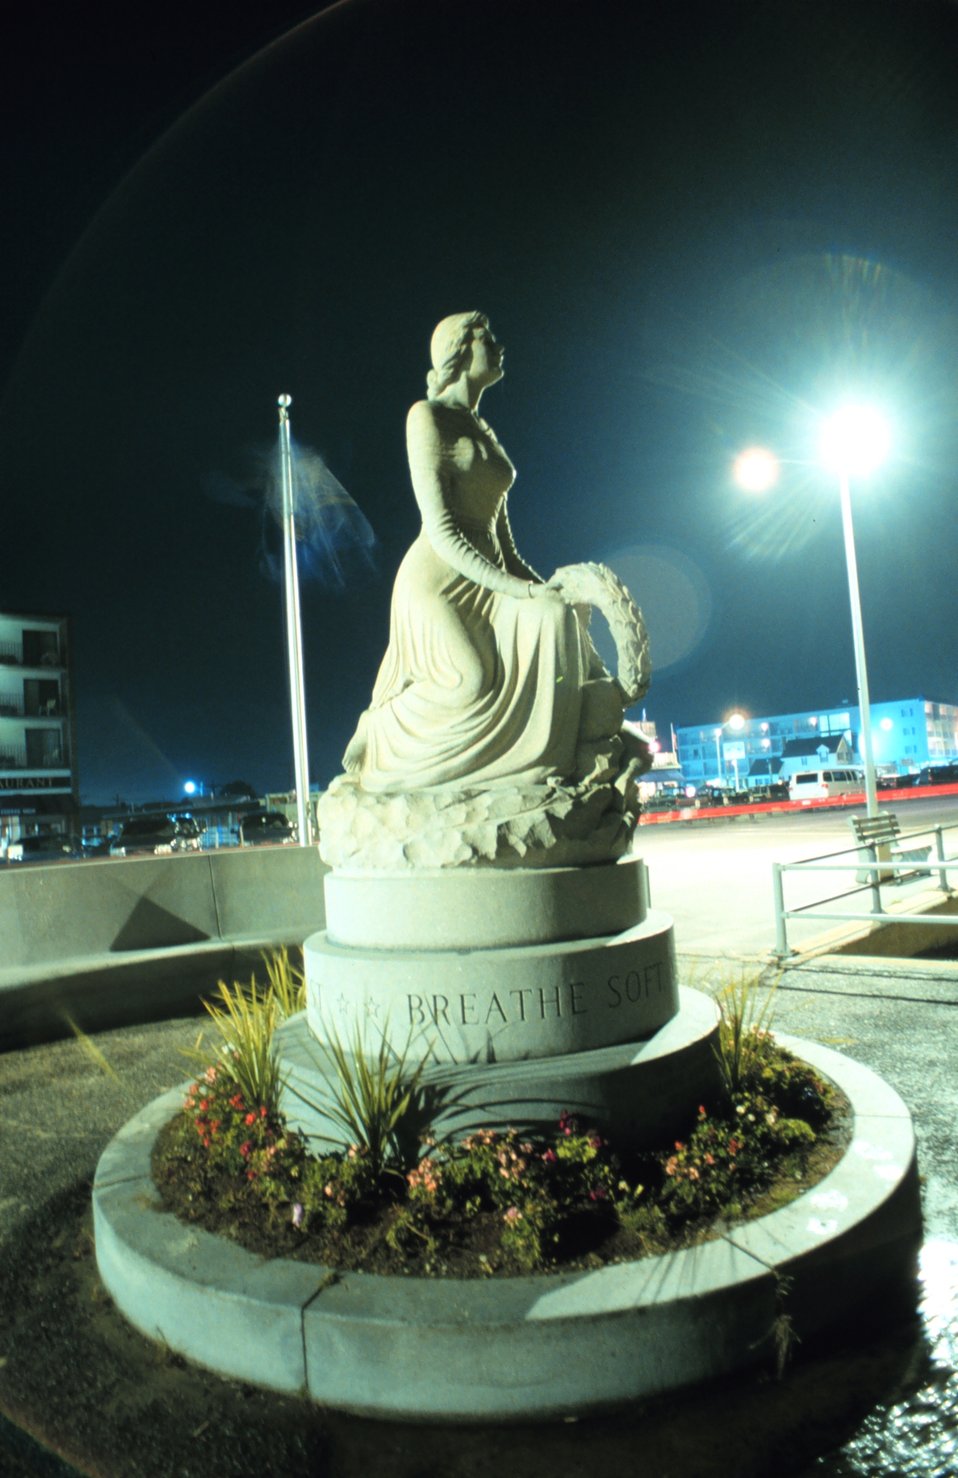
Memorial to those who watch and wait for loved ones to return from the sea.